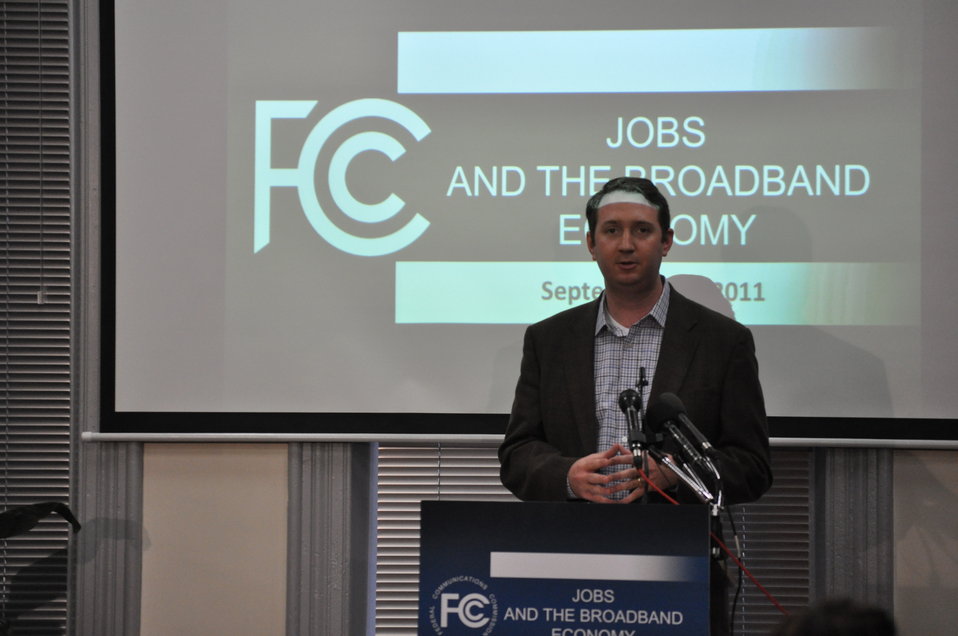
Jobs and the Broadband Economy

Tim O’Shaughnessy , LivingSocial CEO and Co-Founder